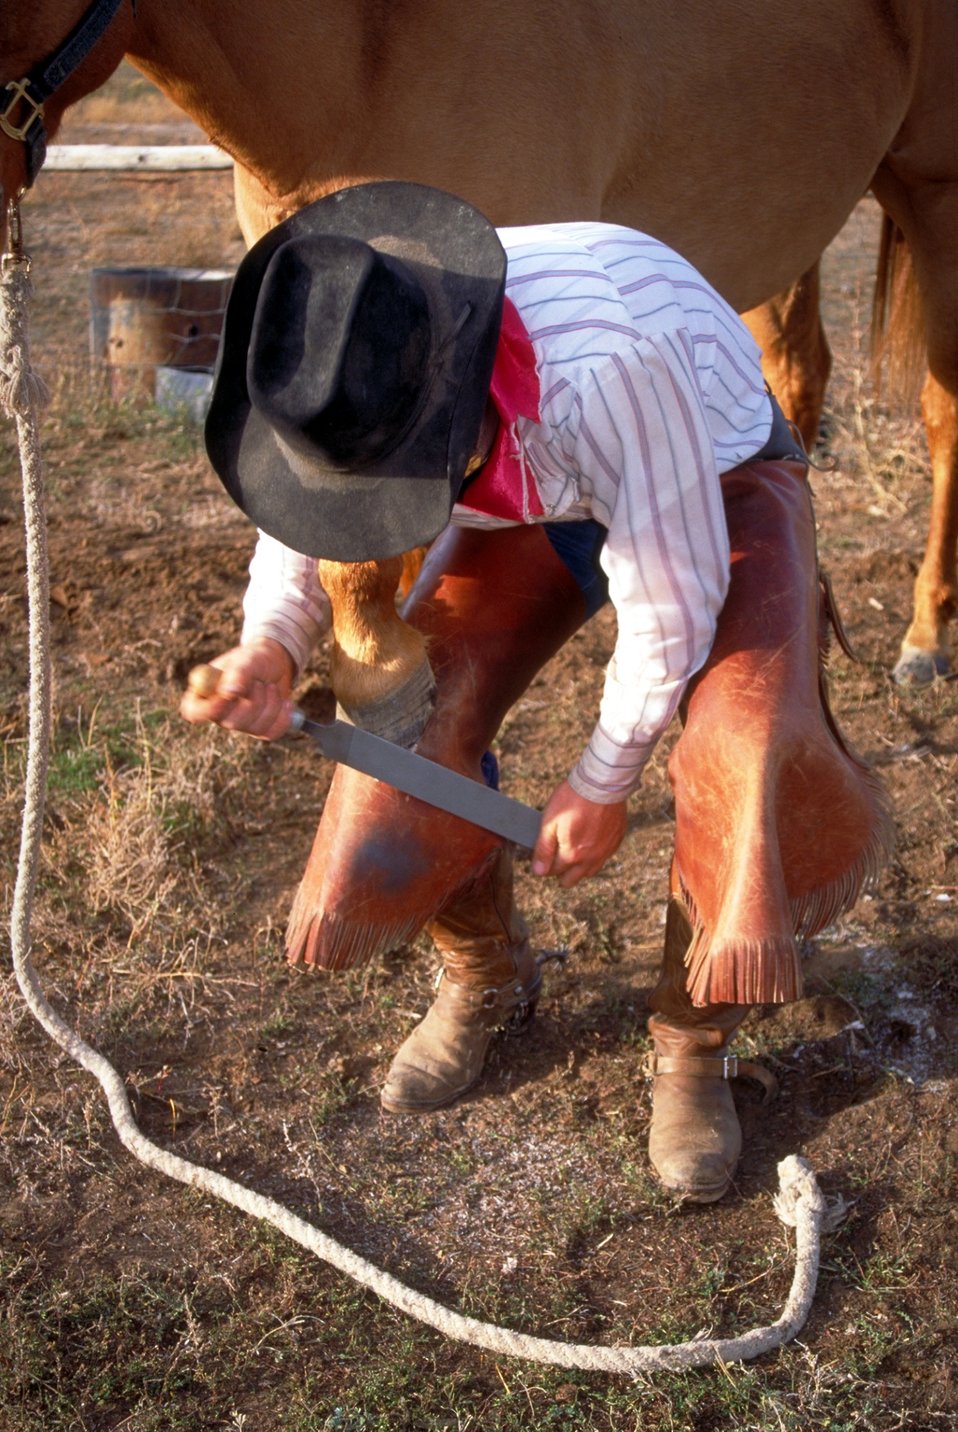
Working cowboys living near Vernal, Utah.